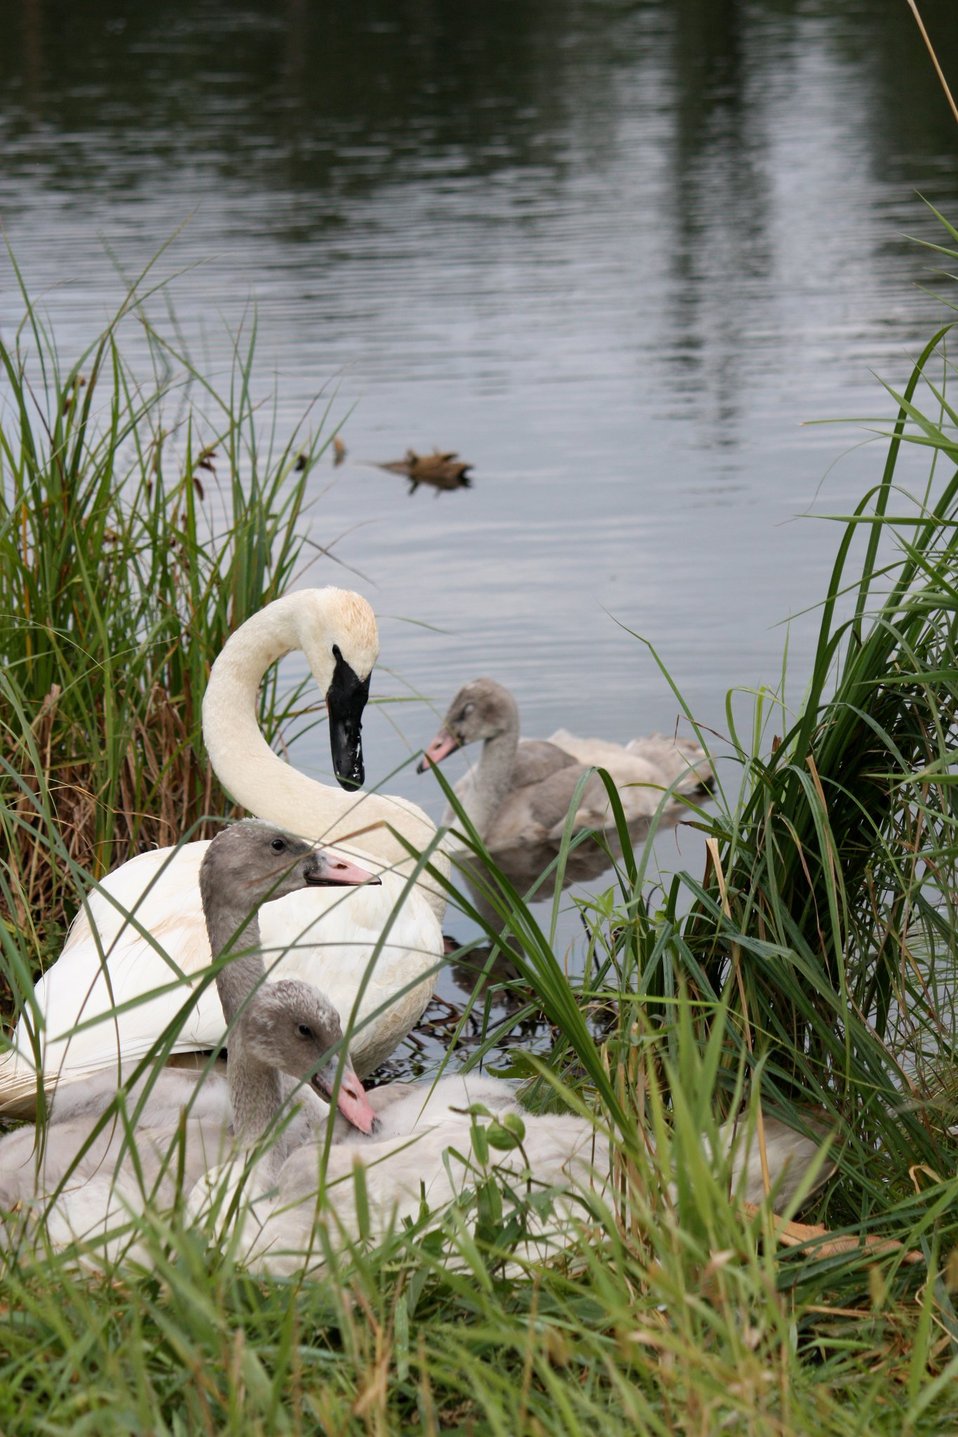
Trumpeter swan family

Tamarac National Wildlife Refuge.